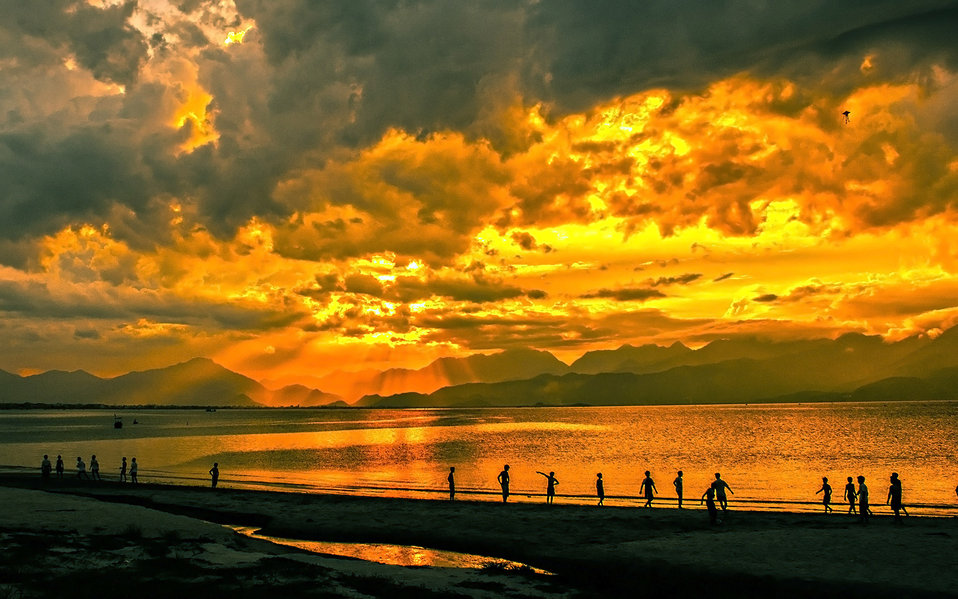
Exciting summer

Sunset on the bay of danang, central vietnam..